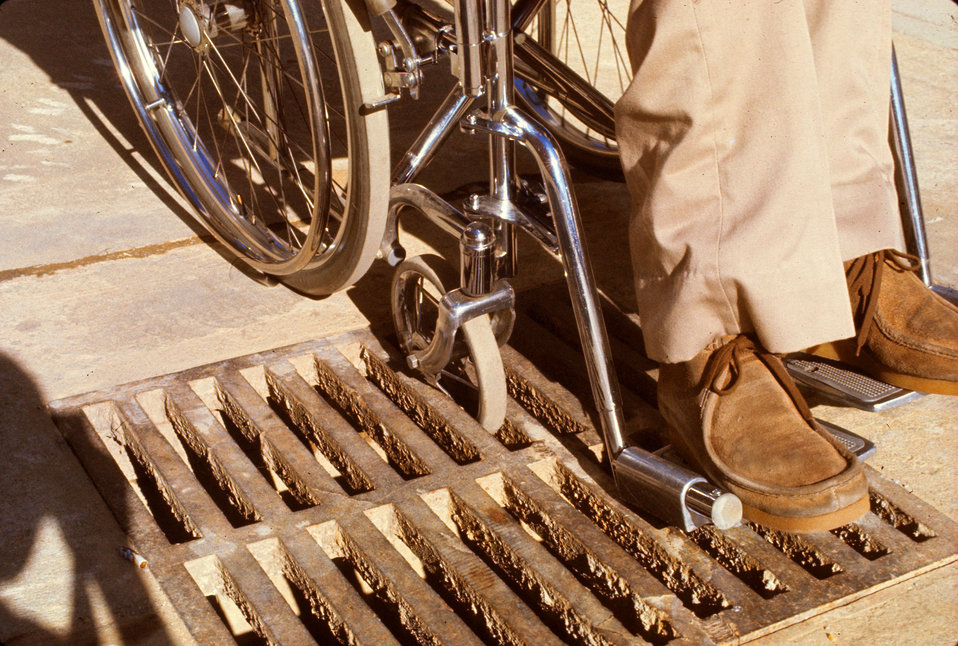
As noted in PHIL 9056, this drainage grate was not designed with the mobility-challenged, wheelchair-seated user in mind. One of the smaller wheels on this wheelchair had become stuck in the grate, in an opening that was designed too wide, unlike the smaller, half inch opening seen in the PHIL 9056 grate. The openings were so wide that a walker's tip, or a walking cane, or the end of a crutch could also become wedged inside the grating.